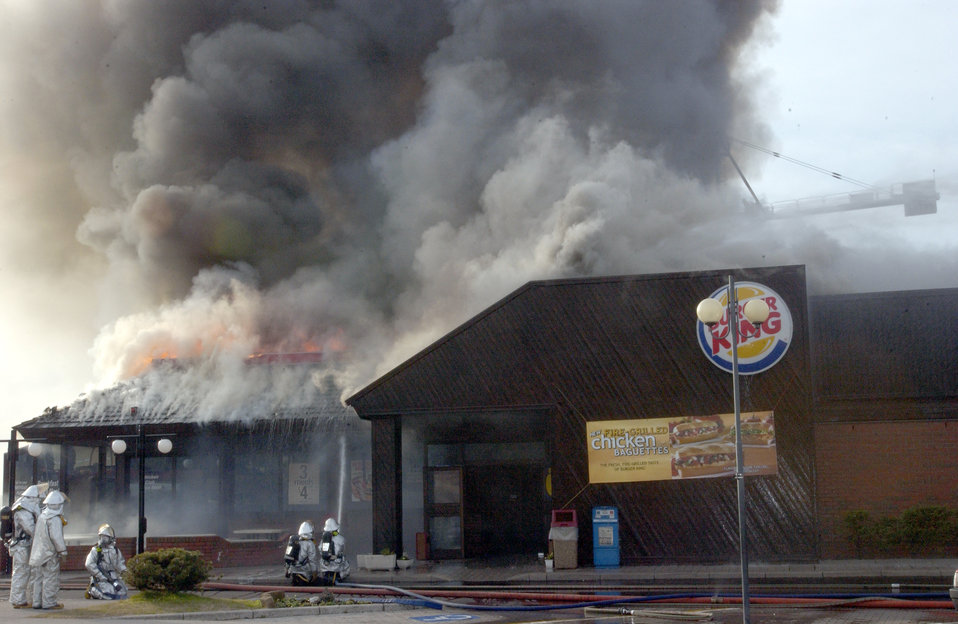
Aviano fire destroys building

AVIANO AIR BASE, Italy -- Air Force firefighters battle a blaze at the base's Burger King here Jan. 12. The fire was reported at about 1:30 p.m. after flames and smoke were seen on the roof of the building. The facility was destroyed.